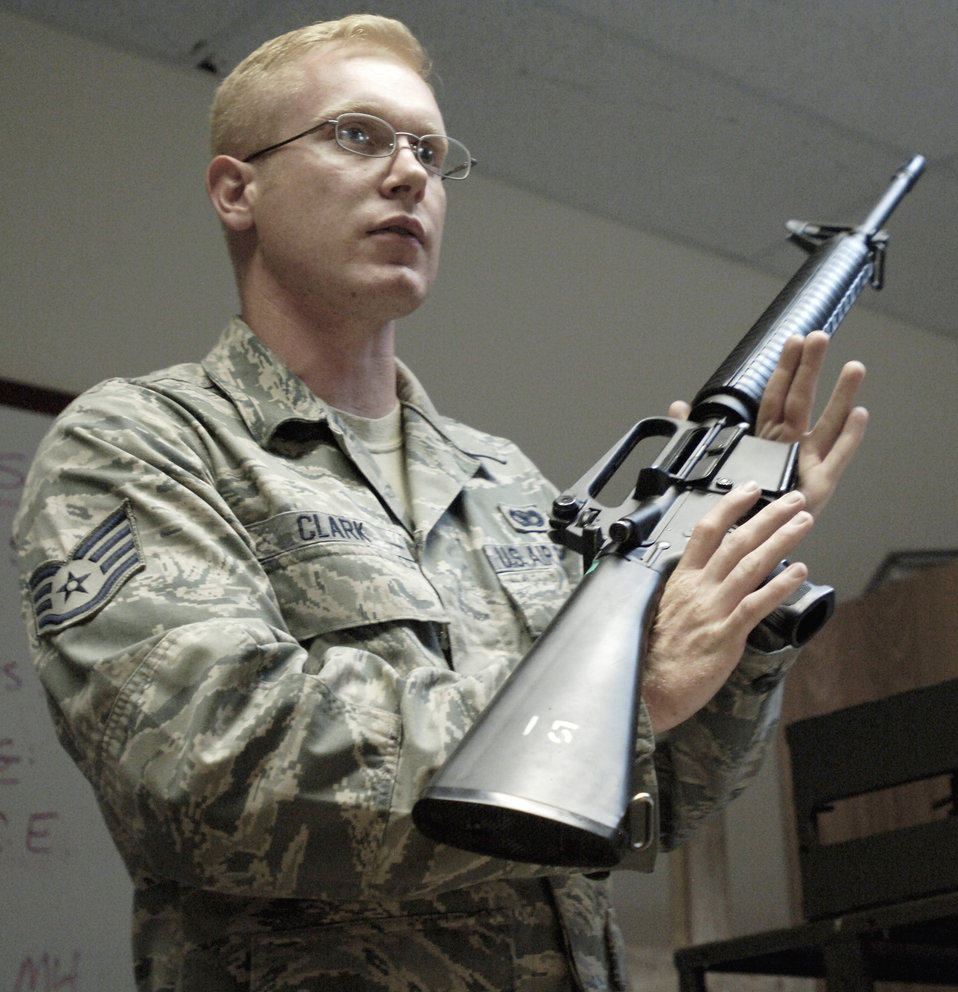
92nd SFS CATM

Staff Sgt. Nathaniel Clark demonstrates proper weapons safety and clearing procedures during a M16-A2 qualifications course July 8, 2010, at the combat arms training and maintenance center. Sergeant Clark is a 92nd Security Forces CATM instructor.